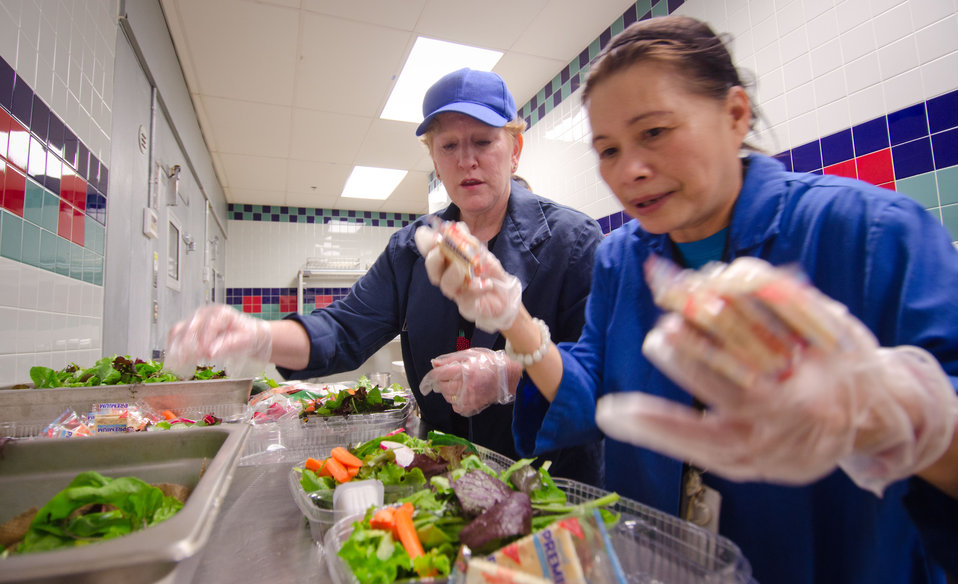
Food Service Manager Hoa Tran (r) and Registered Dietitian Sandra B. O'Connor (l) prepare trays of salad at Nottingham Elementary School in Arlington, VA, on Wednesday, October 12, 2011. Today's menu included roasted chicken, roasted butternut squash with dried cranberries, farm fresh mixed lettuce salad, turkey wraps, pita wedges, hot muffins, carrots, Asian pears and more.